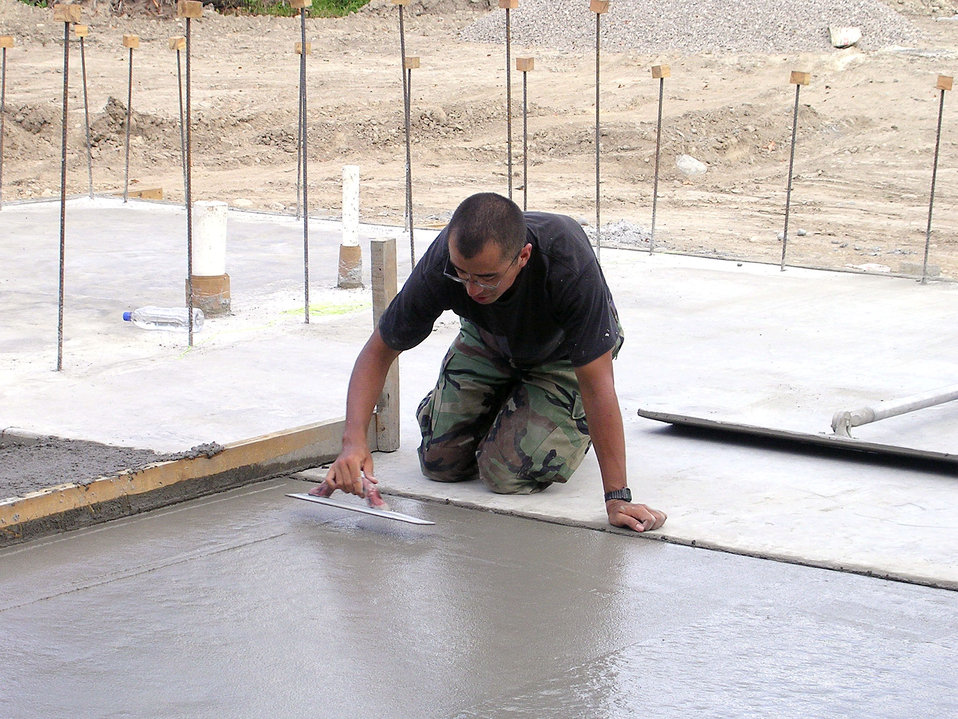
Alaskan team build school in Honduras

Airman 1st Class Thomas Sylvester smoothes the El Cacao school's concrete foundation. Airman Sylvester is among 17 Airmen deployed from the 354th Civil Engineer Squadron at Eielson Air Force Base, Alaska, in support of New Horizons 2006-Honduras. The 354th is building a three-classroom school in the small village of El Cacao.